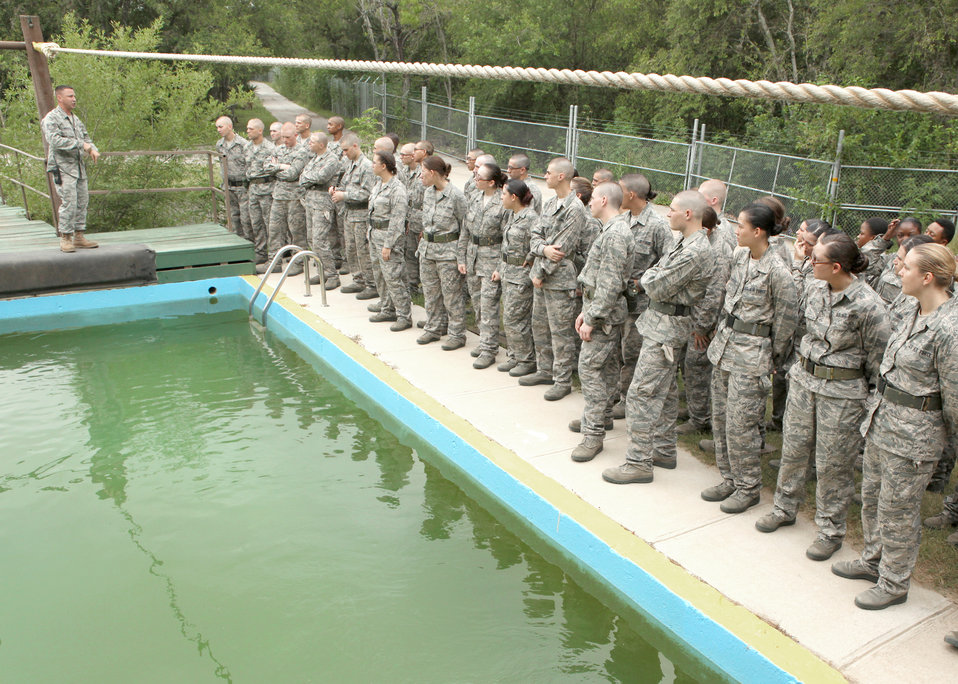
Trainees take on confidence course

Air Force Basic Military Training trainees are given a safety brief on the proper way to cross the water obstacle at the BMT obstacle course on Lackland Air Force Base, Texas. The obstacle course is completing during the fourth week of BMT.